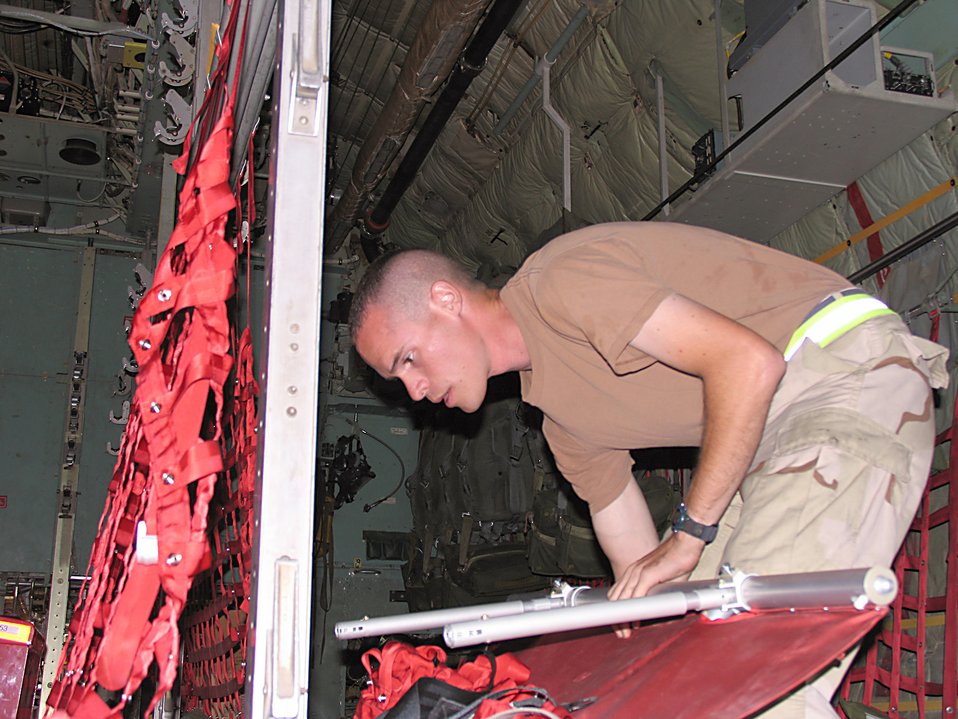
Maintainers keep aircraft flying

SOUTHWEST ASIA (AFPN) -- Senior Airman Chadwick Moore breaks down seating inside a C-130 Hercules before the next mission.